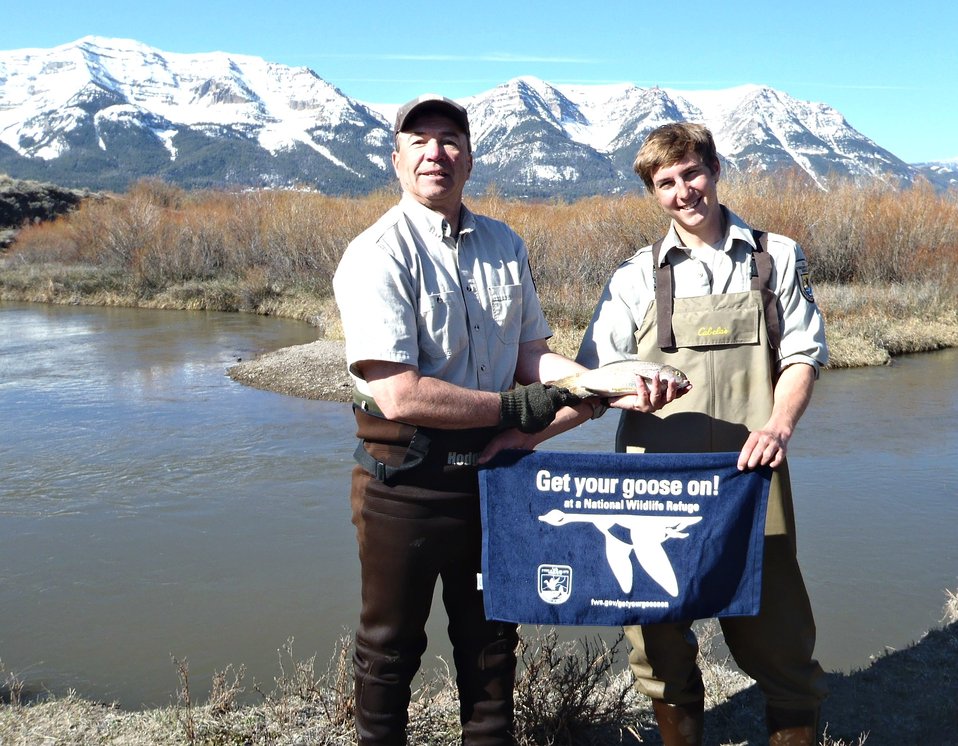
Fisheries and Refuges; a team approach to resource conservation.

Montana Fish and Wildlife Conservation Office (FWCO) Biologist Glenn Boltz, (retired) (left) and seasonal biotech, Jason Marsh (right), holding an Arctic Grayling collected from Red Rock Creek, Red Rock Lakes National Wildlife Refuge, MT. The Fisheries Division of the US Fish and Wildlife Service has been assisting Red Rock Lakes NWR with monitoring and managing this unique population of Arctic Grayling for nearly 2 decades. This has been a long-term collaborative effort to 'Get our goose on!' in an effort to jointly conserve this unique population of fish in south-west Montana.